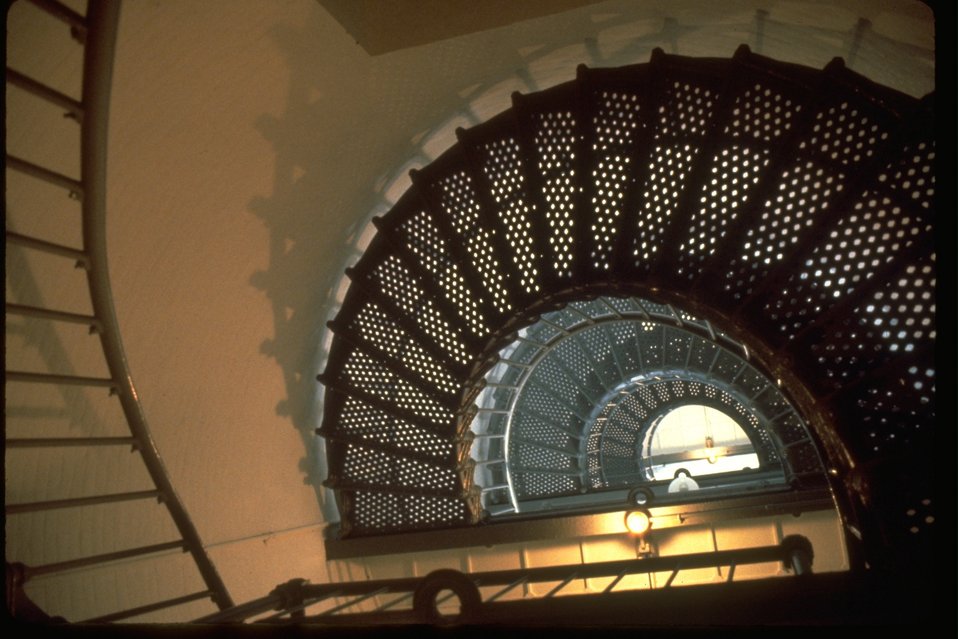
The interior of the Yaquina Head Lighthouse.